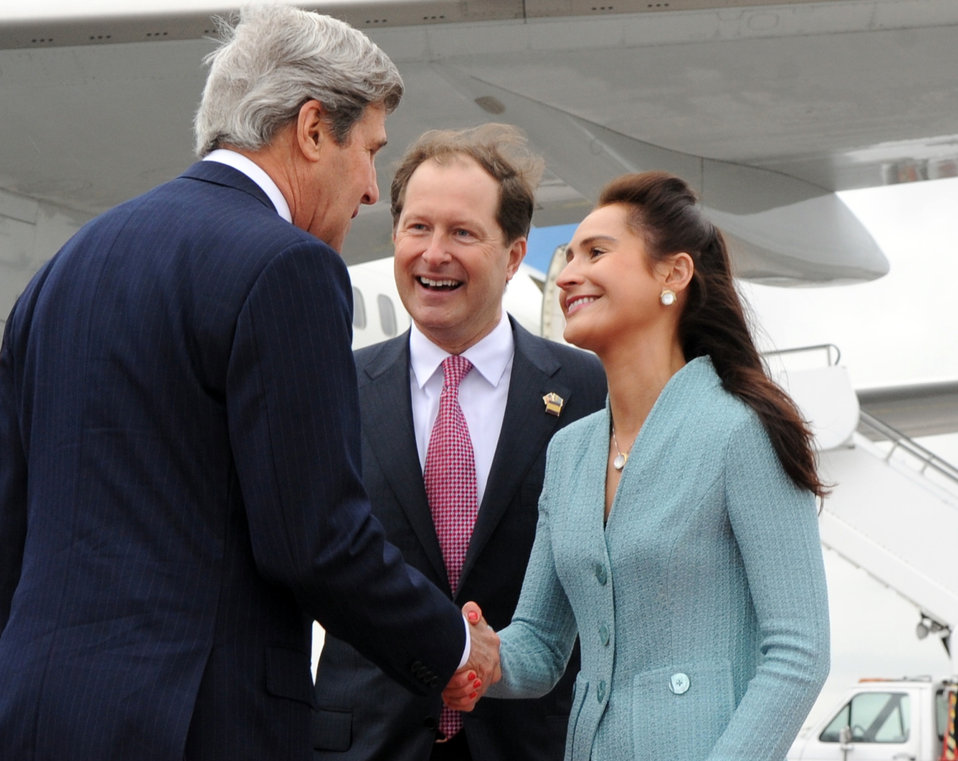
Secretary Kerry Arrives in Stockholm, Sweden

U.S. Secretary of State John Kerry is greeted by U.S. Ambassador to Sweden Mark Brzezinski and his wife upon arriving in Stockholm, Sweden, on May 14, 2013.